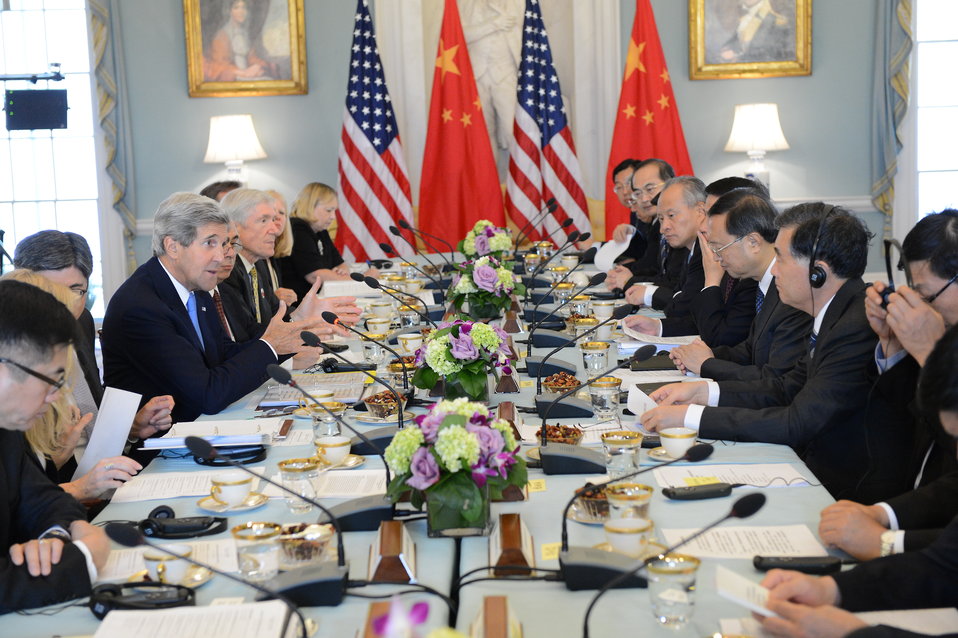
Secretaries Kerry and Lew, Chinese State Councilor Yang, and Chinese Vice Premier Wang Participate in the Joint Session on Energy Security

U.S. Secretary of State John Kerry, U.S. Secretary of the Treasury Jacob Lew, Chinese State Councilor Yang, and Chinese Vice Premier Wang participate in the U.S.-China Economic and Strategic Dialogue Joint Session on Energy Security at the U.S. Department of State in Washington, DC on July 10, 2013.